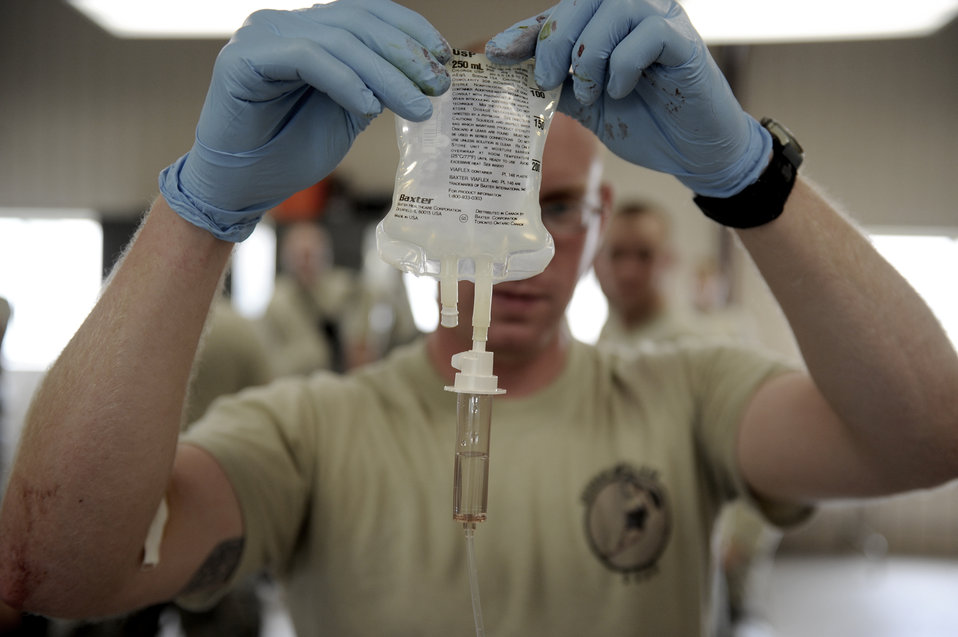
Combat Skills Training

Tech. Sgt. John Herrick inspects an IV bag during the combat lifesavers course at Fort Dix, N.J., July 29. Combat skills training is a month-long Army training program that prepares Airmen for Joint Expeditionary Tasking combat roles augmenting the U.S. Army in support of operations Enduring and Iraqi Freedom. Sergeant Herrick is a still photographic craftsman assigned to the 4th Combat Camera Squadron at March Air Reserve Base, Calif.